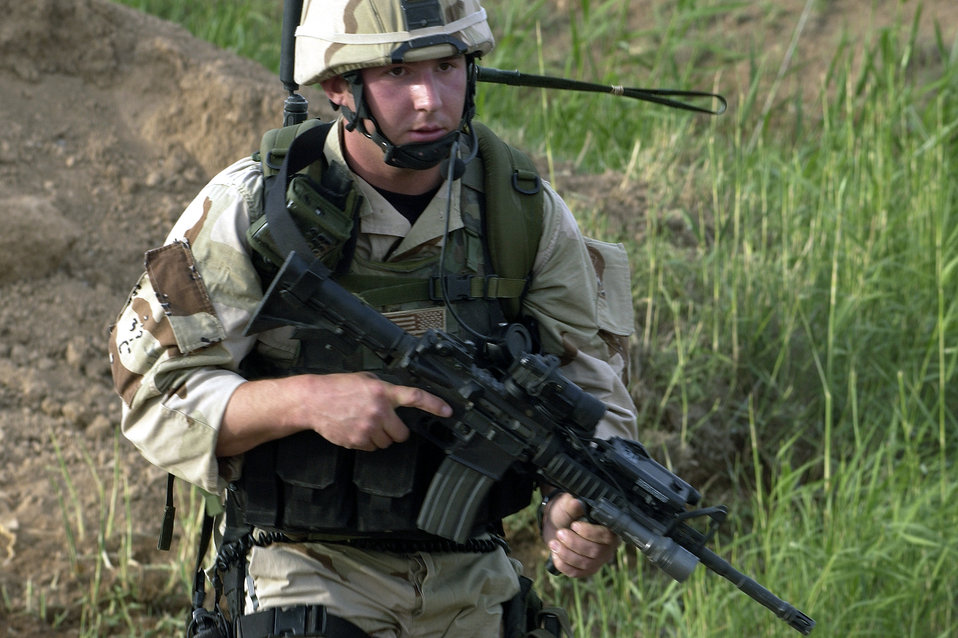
Clearing the land

BALAD AIR BASE, Iraq -- Senior Airman Casey Harrell ensures the area is clear of innocent civilians before calling for an air strike here April 26. Airman Harrell is a tactical air control party Airman assigned to the 116th Air Support Operations Squadron.